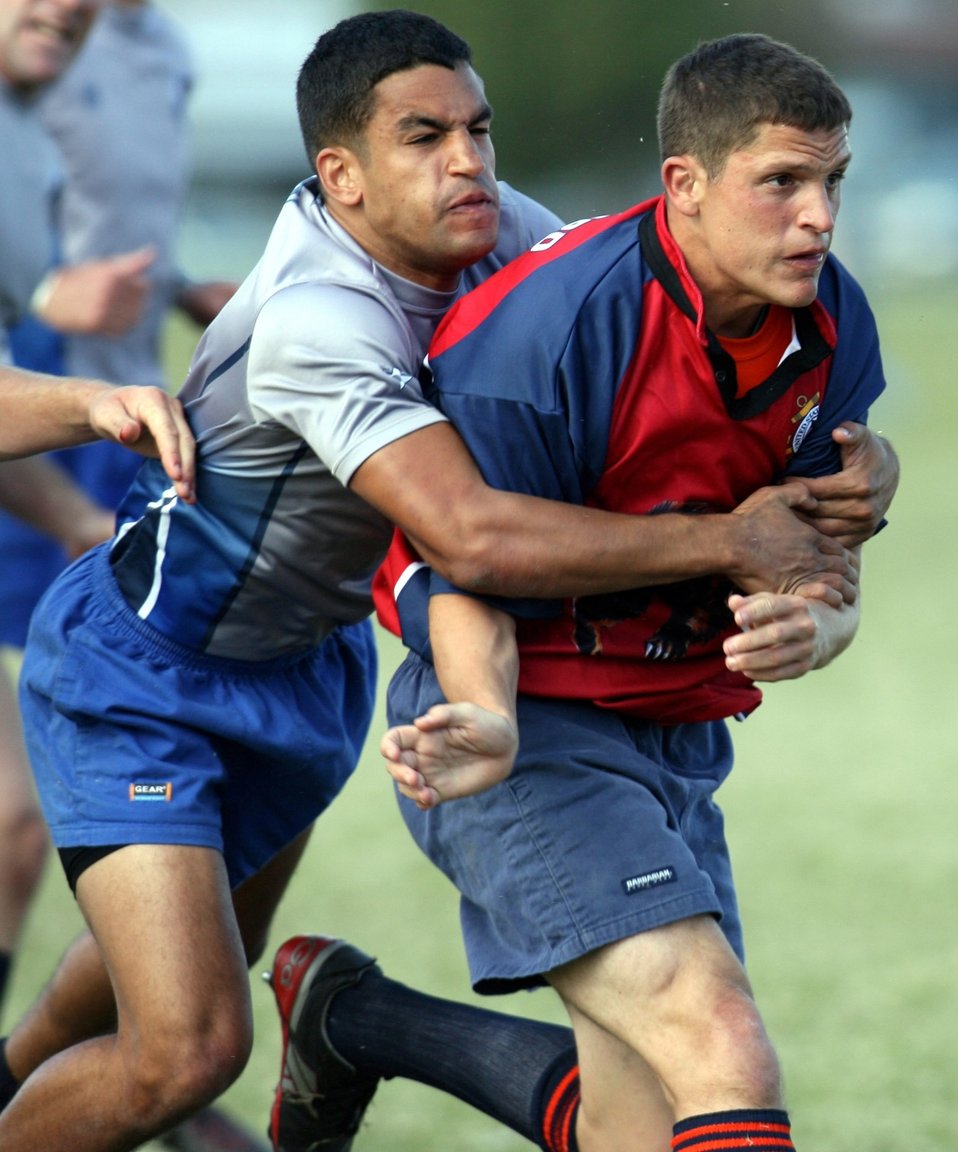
AF rugby team wins third straight Armed Forces title

Air Force 1st Lt. David Pina tackles a Coast Guard player during their match Oct. 24 at the Armed Forces Rugby Championship at Camp Lejeune, N.C. The Air Force team, which went on to win its third consecutive tournament title, defeated the Coast Guard team 37-3.